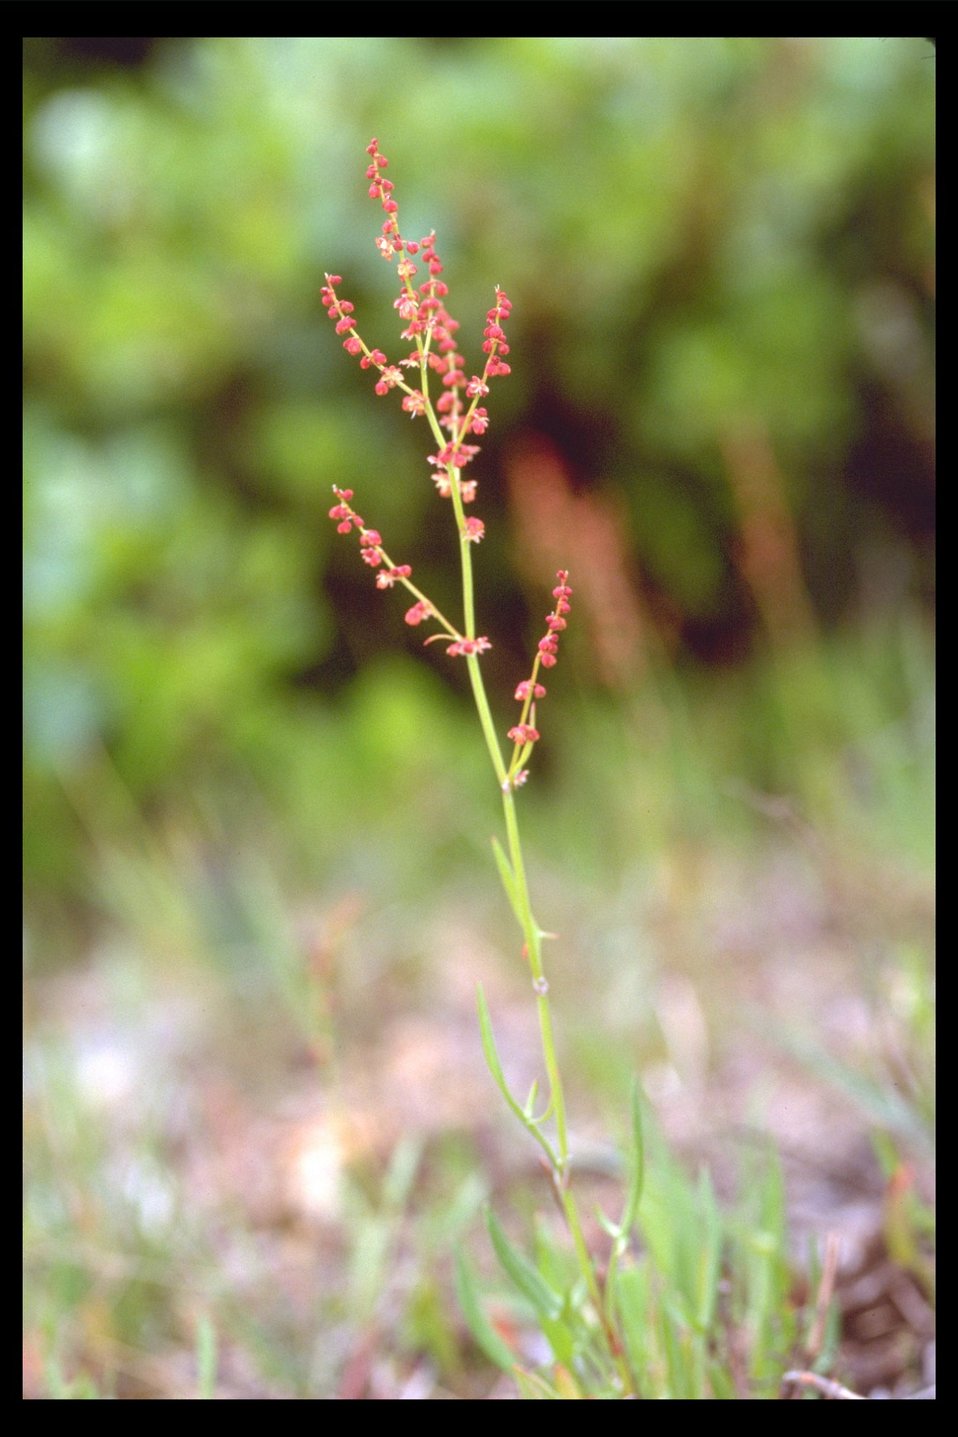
Sheep Sorrel or Red Sorrel (Rumex acetosella) near Upper Trail Creek.